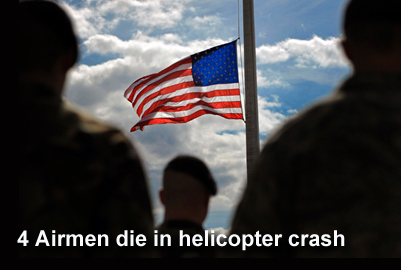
4 Airmen die in helicopter crash

Department of Defense officials announced June 9, 2010, the deaths of four Airmen who were supporting Operation Enduring Freedom.